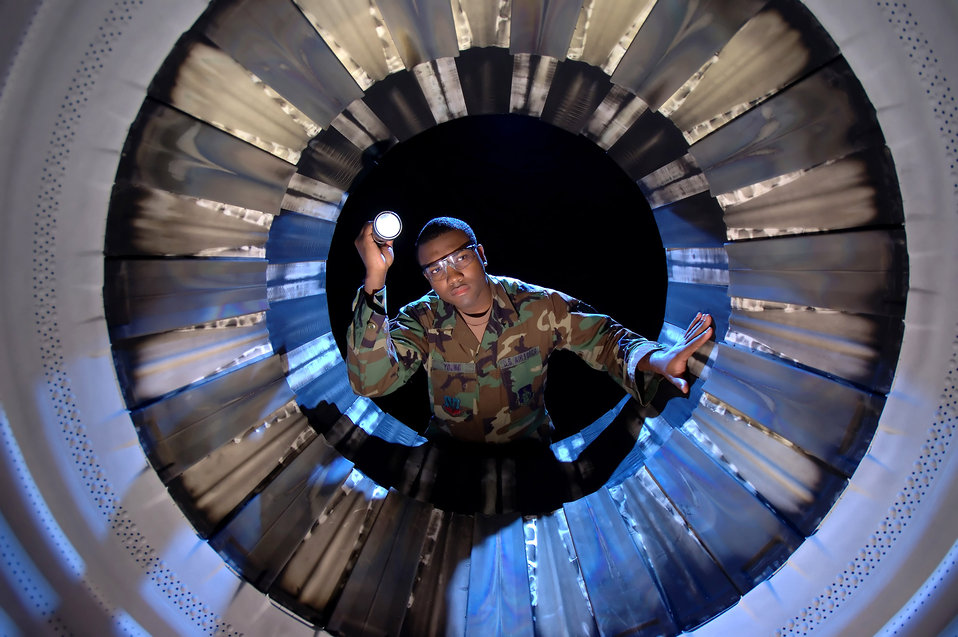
'Turkey feather' check

BURLINGTON INTERNATIONAL AIRPORT, Vt. -- Airman 1st Class Jacques Young inspects the